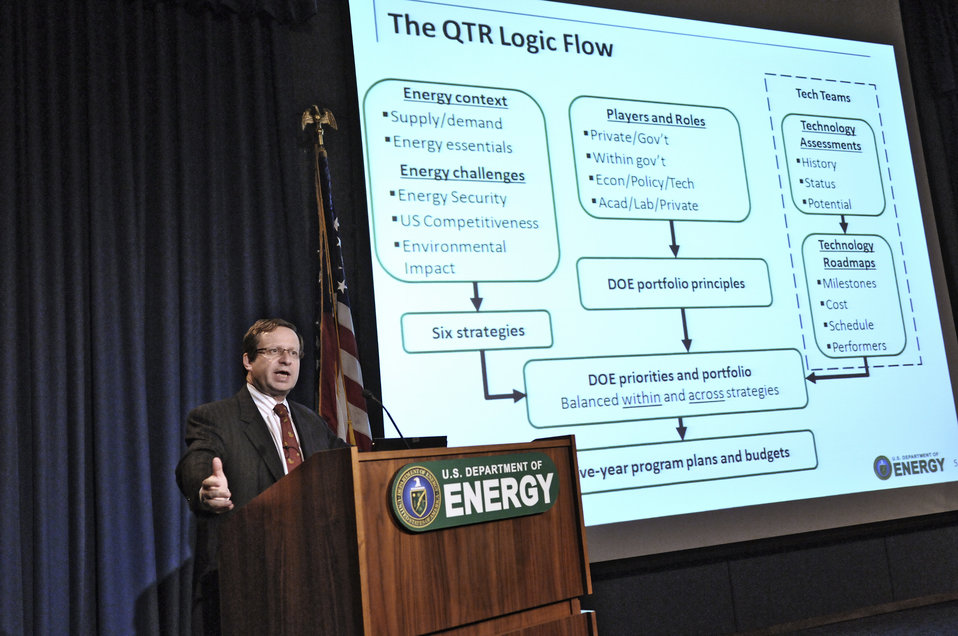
Dr. Steve Koonin releases the results of the the Department of Energy's Quadrennial Technology Review.